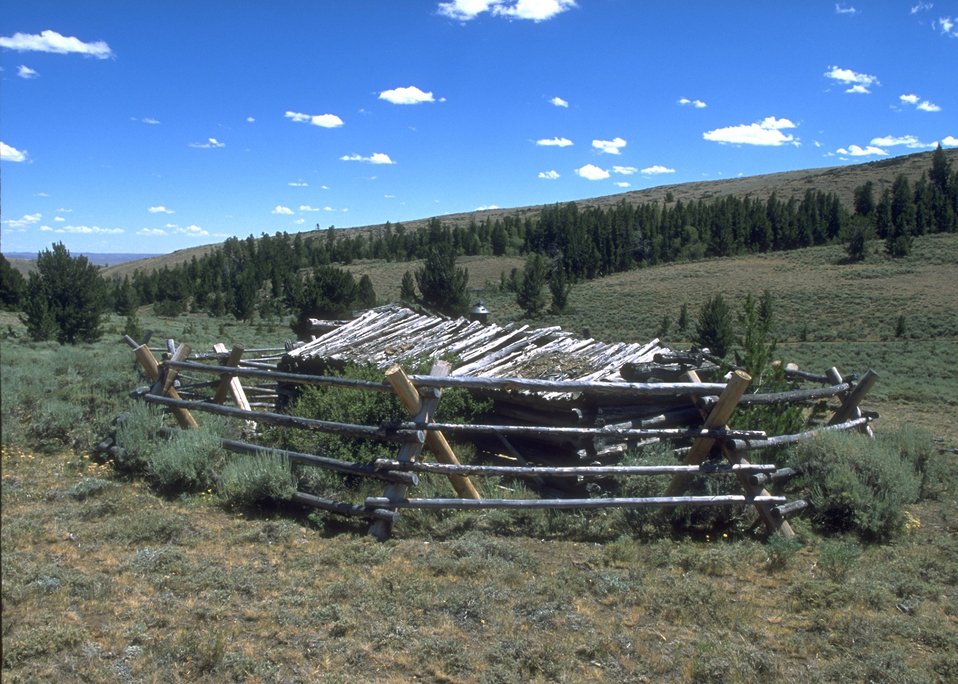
Cabin north of South Pass City along the Continental Divide Trail, Lander Field Office.